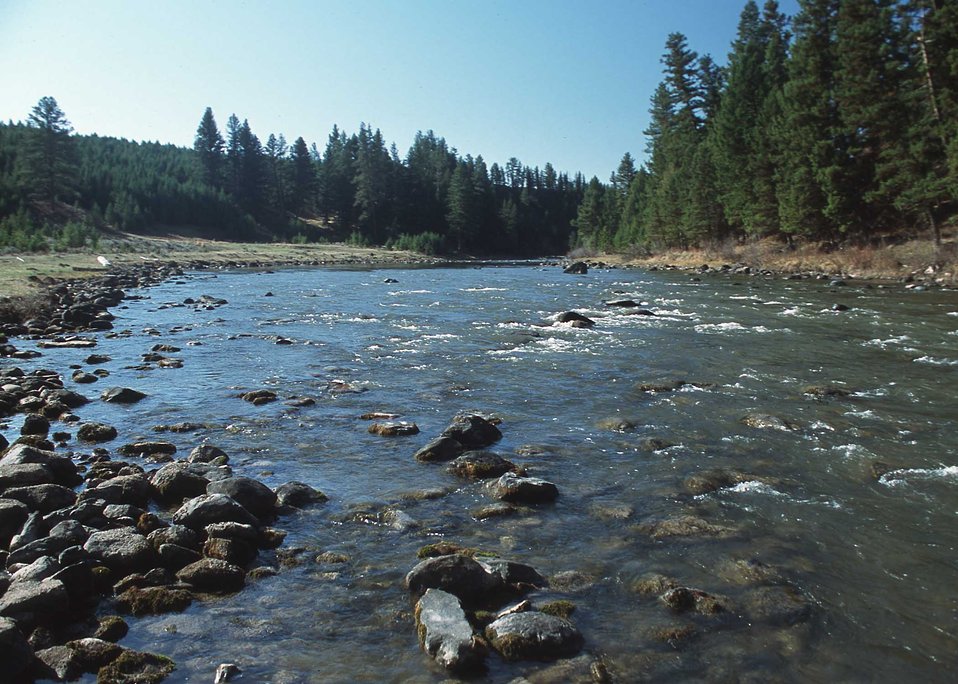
Blackfoot River in Powell County, MT.